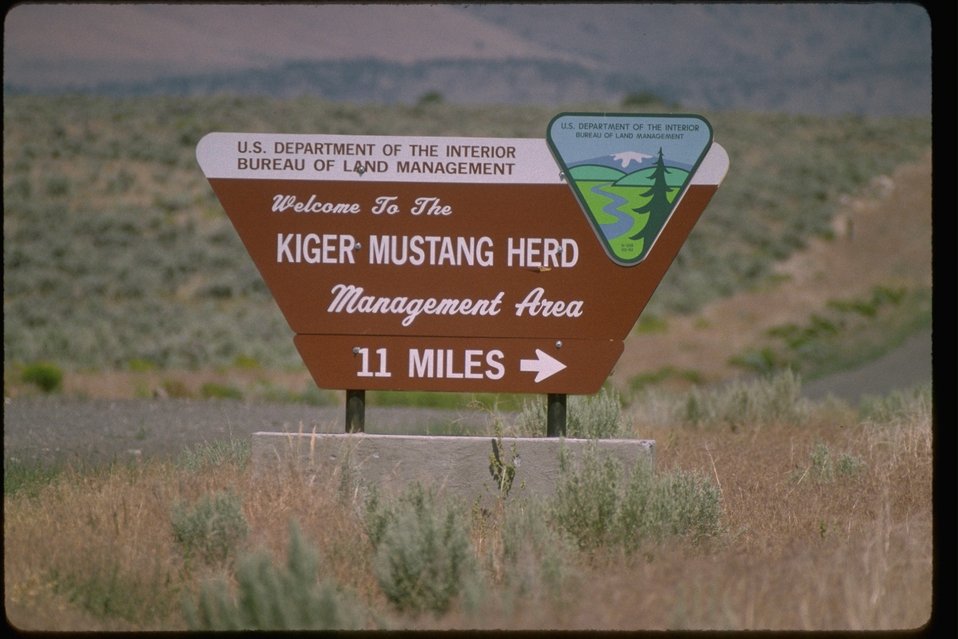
Portal sign to Kiger Mustang viewing area near Diamond, Oregon in the Burns District.